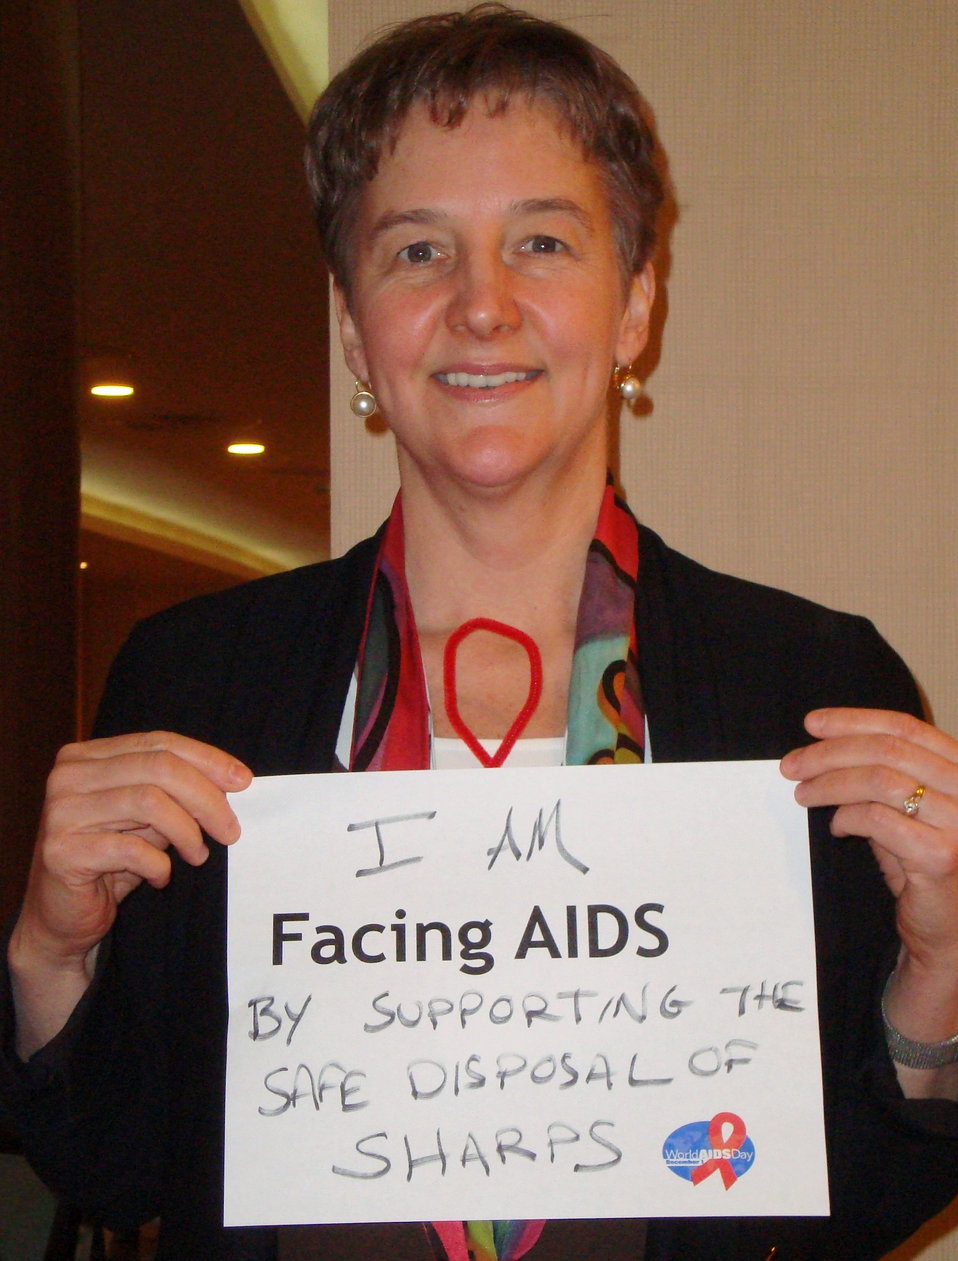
FacingAIDSCampaign 058